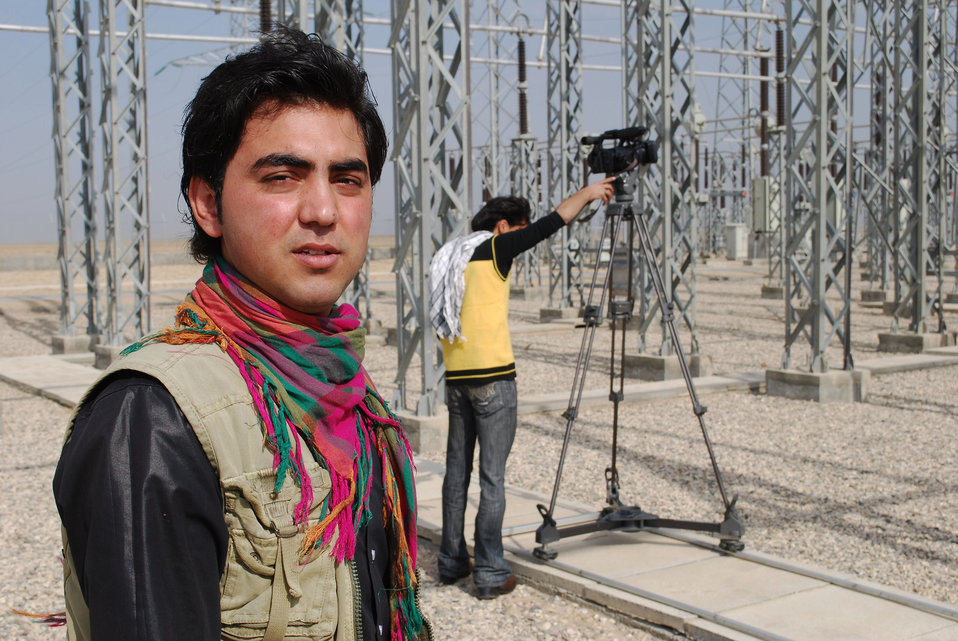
'On the Road' in Balkh Province